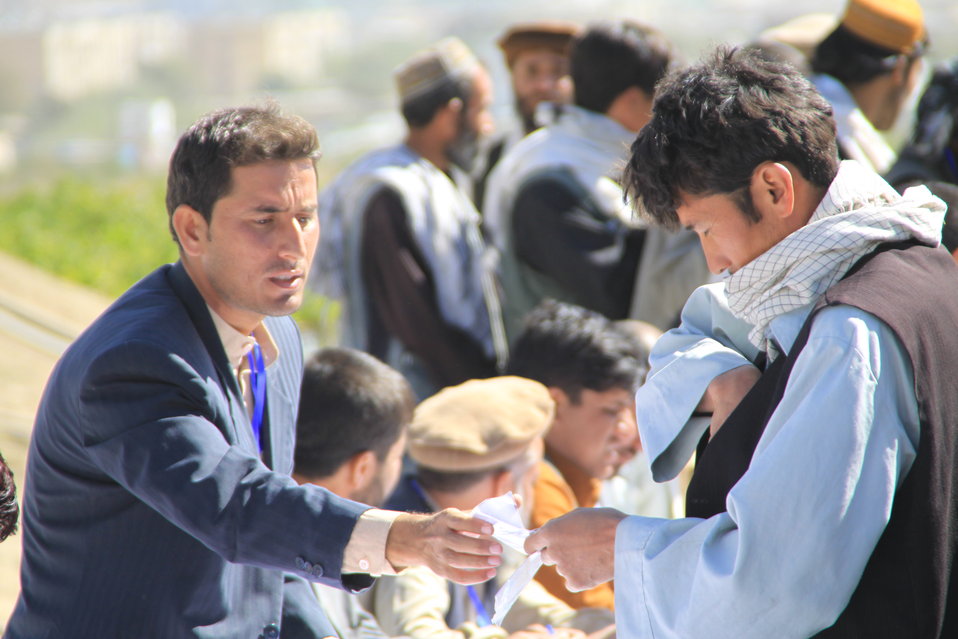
AVIPA Plus Wheat Seed Distribution 101005

US Ambassador Karl Eikenberry and USAID Acting Mission Director Kevin Brownawell joined the Minister of Agriculture, Irrigation and Livestock, H.E. Minister Mohammed Rahimi in signing a Memorandum of Understanding and distributing vouchers to area farmers for wheat and fertilizer.

US Ambassador Karl Eikenberry and USAID Acting Mission Director Kevin Brownawell joined the Minister of Agriculture, Irrigation and Livestock, H.E. Minister Mohammed Rahimi in signing a Memorandum of Understanding and distributing vouchers to area farmers for wheat and fertilizer.

US Ambassador Karl Eikenberry and USAID Acting Mission Director Kevin Brownawell joined the Minister of Agriculture, Irrigation and Livestock, H.E. Minister Mohammed Rahimi in signing a Memorandum of Understanding and distributing vouchers to area farmers for wheat and fertilizer.